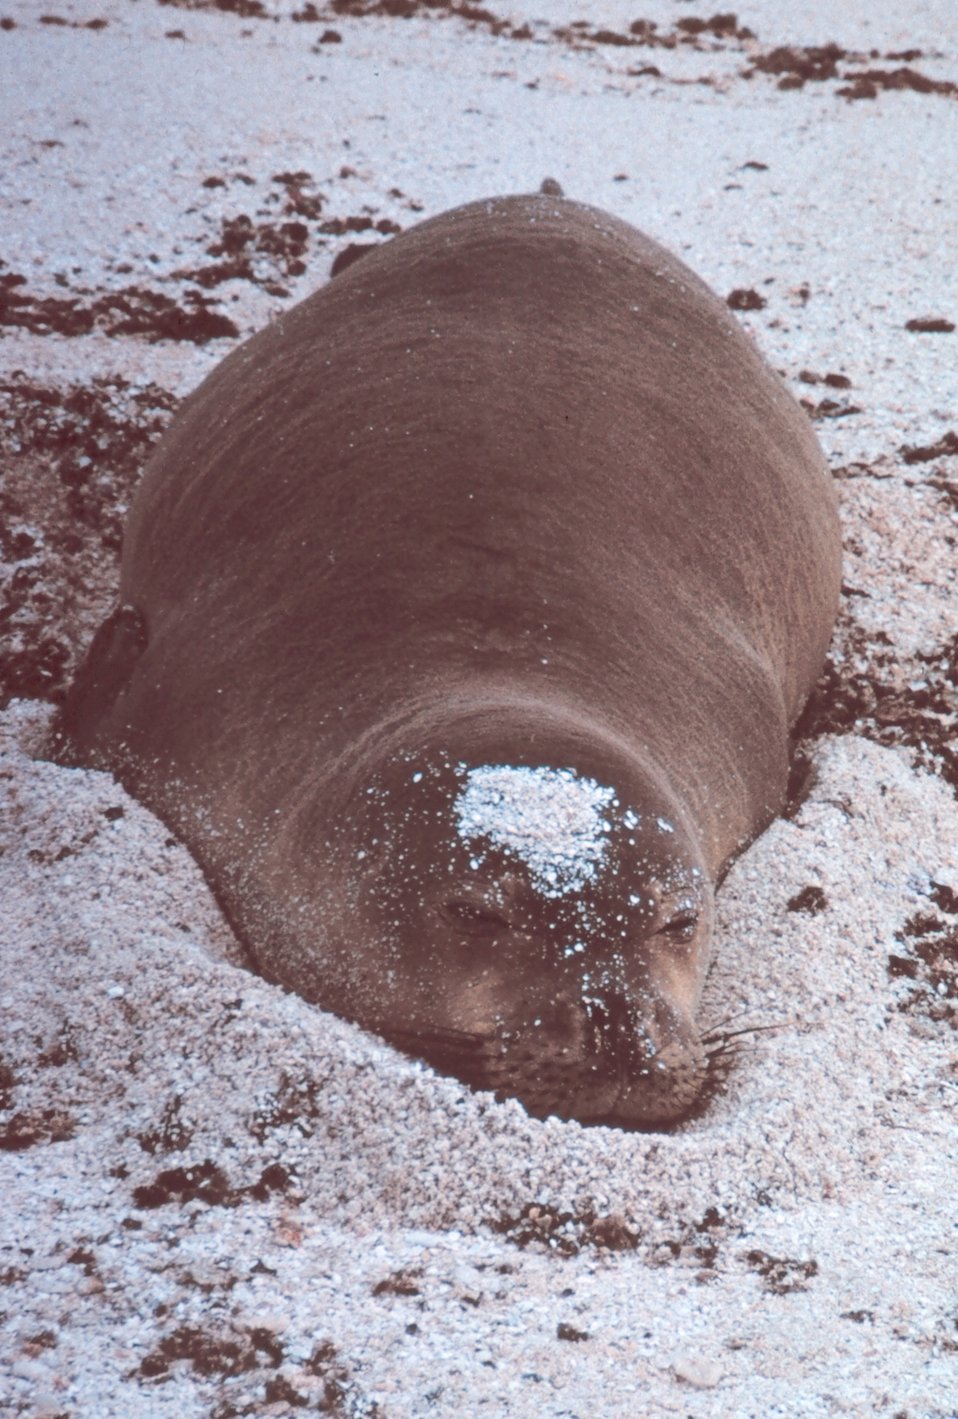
Hawaiian monk seal - Monachus schauinslandi.